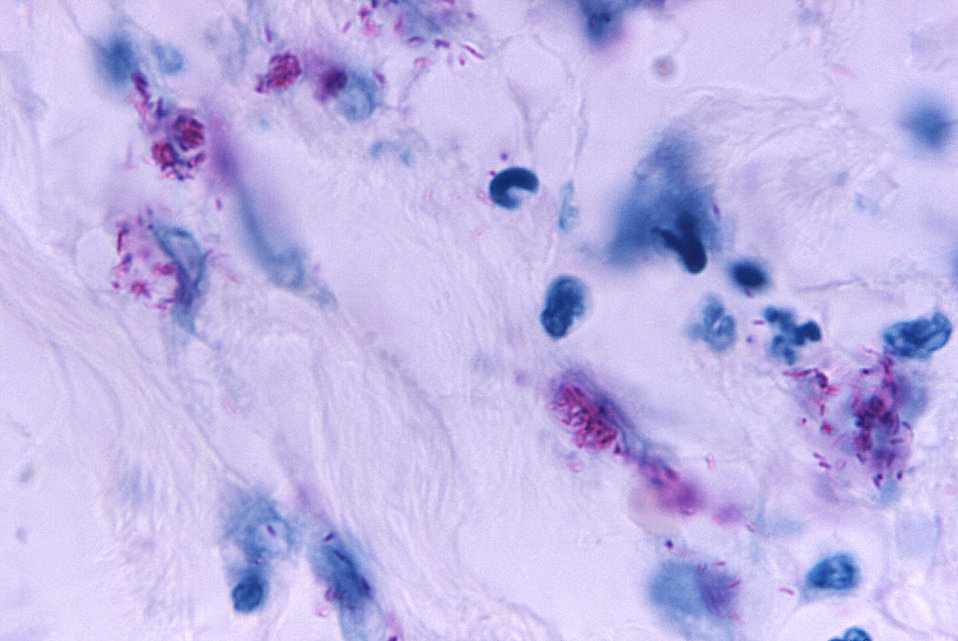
This light photomicrograph revealed some of the histopathologic cytoarchitectural characteristics seen in a mycobacterial skin infection.